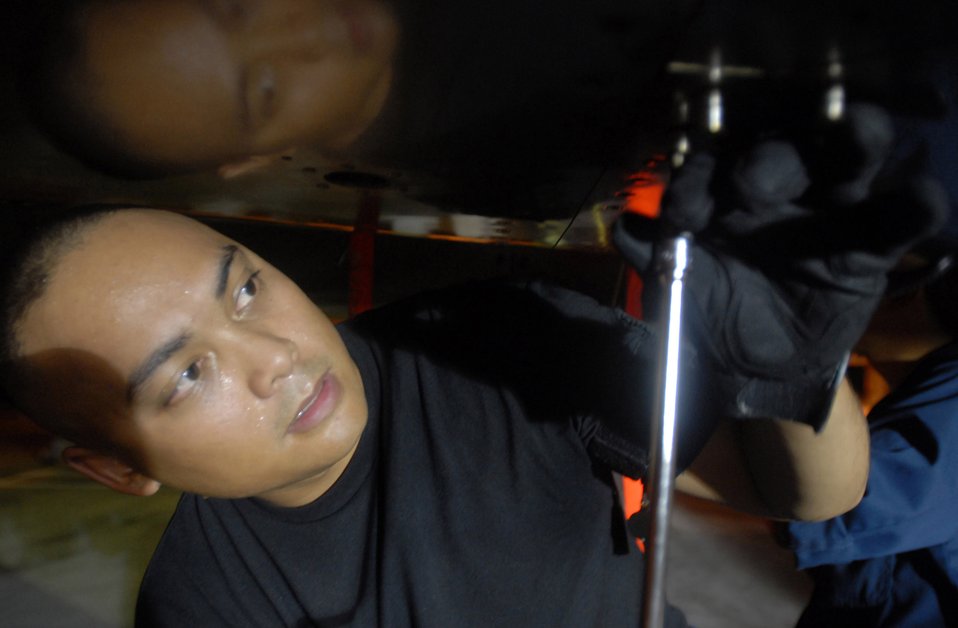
Crew chiefs work around the clock

Airman 1st Class Rico Babas uses a speed handle to place panels on an F-15 Eagle during an Aug. 23 base exercise at Kadena Air Base, Japan. By doing this they ensure the panels are in place and won't fall off during flight. The base conducted a three-day base exercise to demonstrate its ability to deploy and generate aircraft. Airman Babas is an inspection team member with the 18th Equipment Maintenance Squadron.